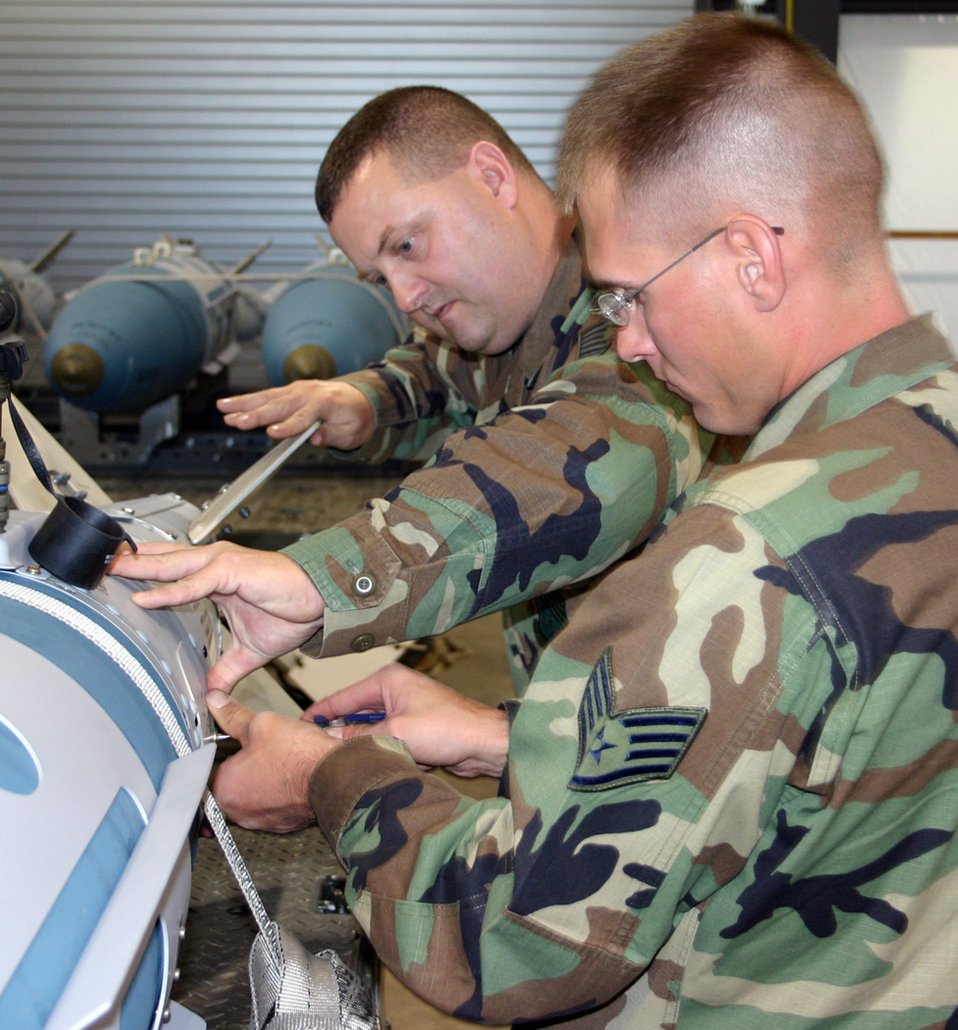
Airmen build JDAMs for first Raptor deployment

HILL AIR FORCE BASE, Utah -- Tech. Sgt. James Peddicord (back) and Staff Sgt. Charles Mohs seal an access panel on a Joint Direct Attack Munition before transporting it to the flightline here during an exercise. The Airmen are assigned to the 1st Equipment Maintenance Squadron.